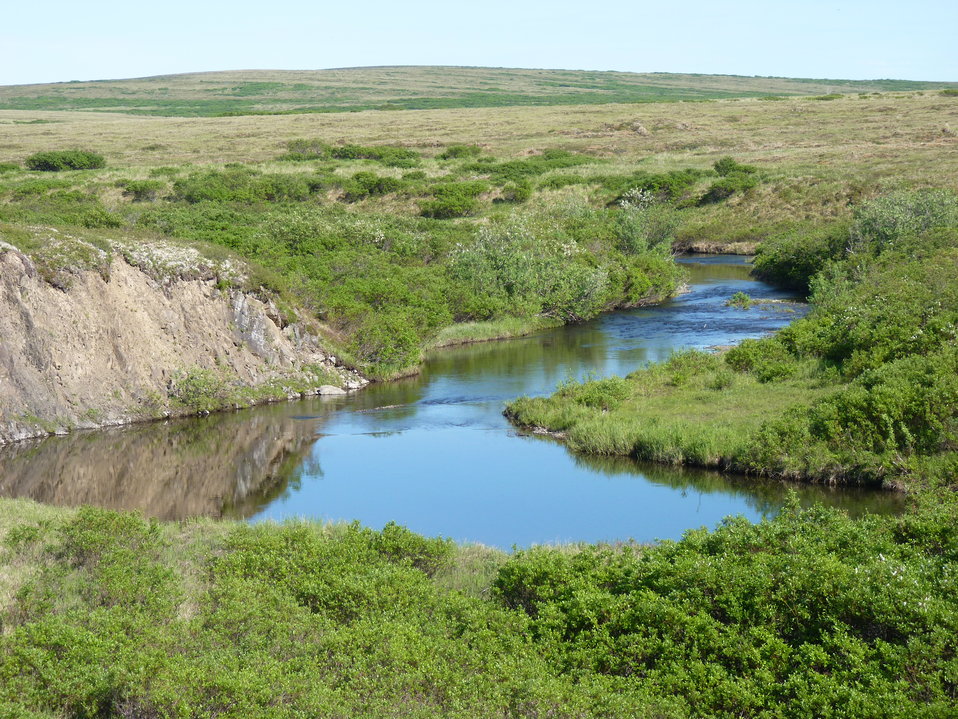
Allen Creek

Andreafsky Wilderness, Yukon Delta National Wildlife Refuge